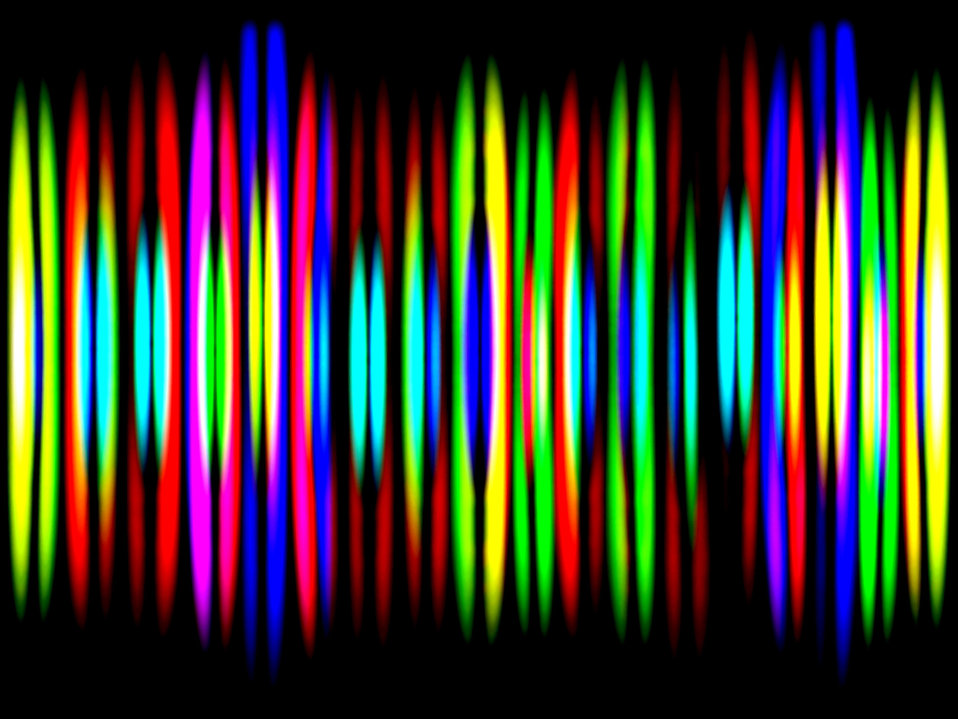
Background 373

Background.